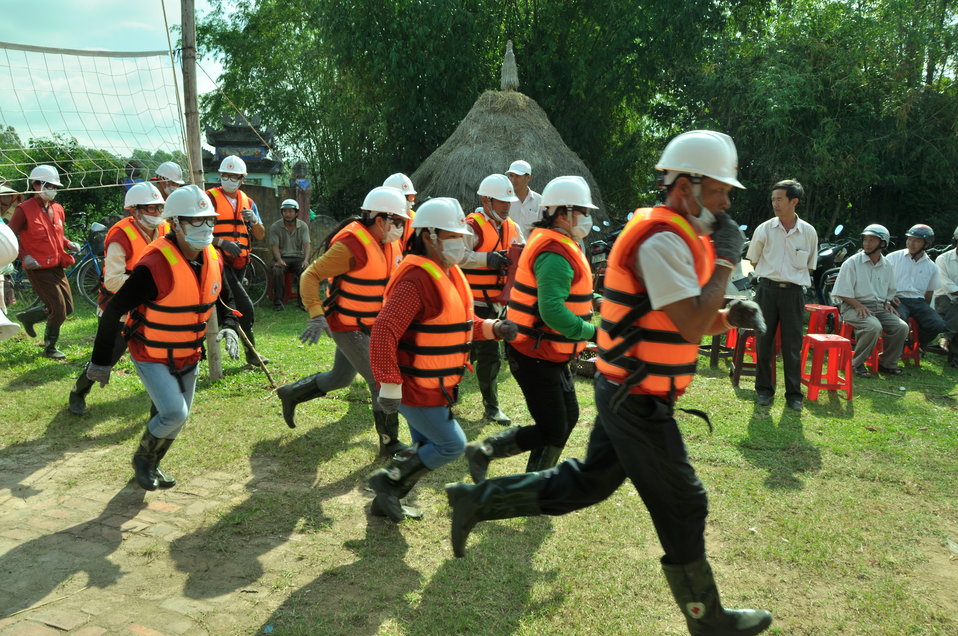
USAID, Red Cross Support Disaster Response Drill in Duy Hoa Commune, Quang Nam Province

Duy Hoa Commune, Quang Nam Province
December 5, 2012